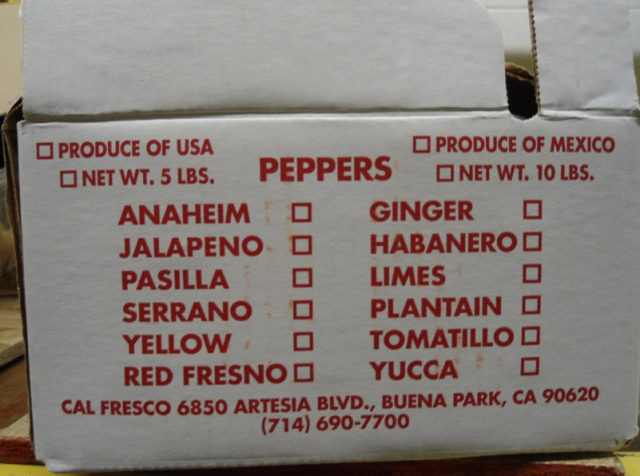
RECALLED - Jalapeño and Serrano chili peppers

December 21, 2011 - Product Recall - Cal Fresco, LLC Recalls Jalapeño and Serrano Chili Peppers Due to Possible Health Risk.